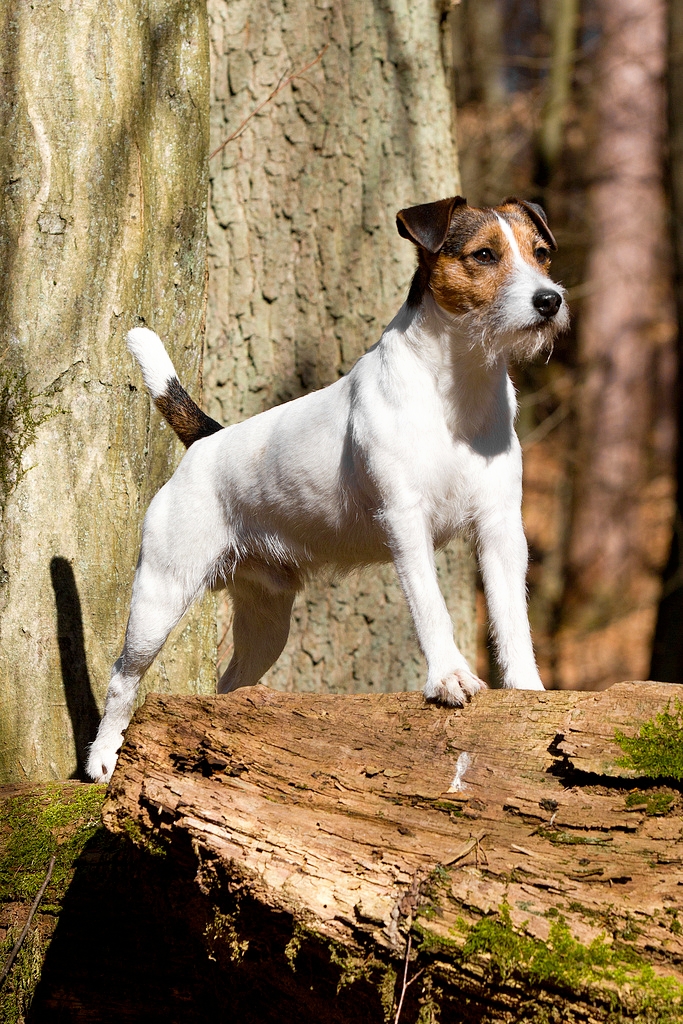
Dark of Parson Place Parson Russell Terrier Broken coated (Stockhaar) und Tricolor